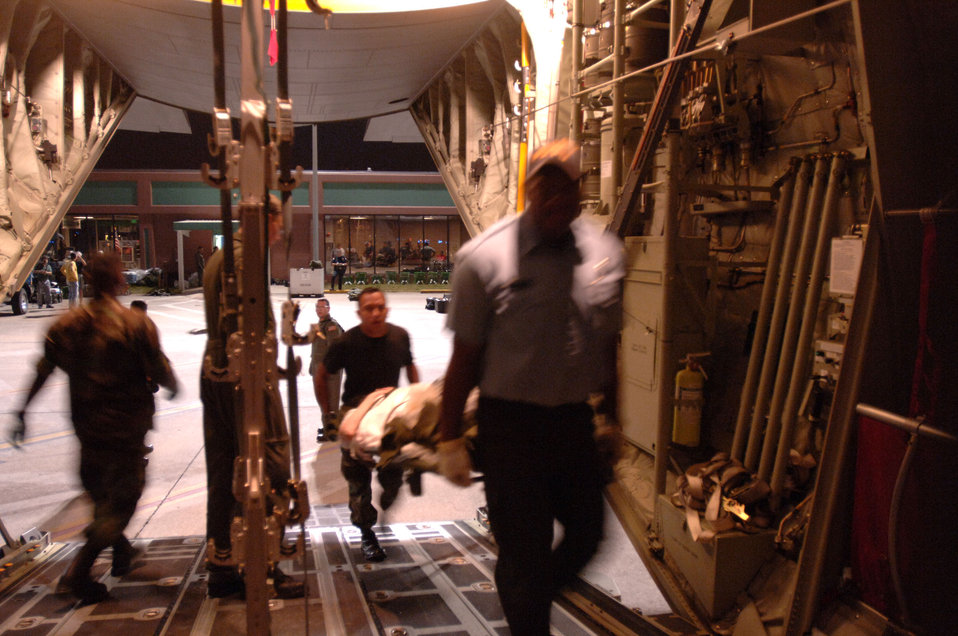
Airlifted to safety

BEAUMONT, Texas -- A patient is carried aboard a C-141 Starlifter here Sept. 22, during the evacuation of residents before the arrival of Hurricane Rita. Airmen from the 433rd Aeromedical Evacuation Squadron at Lackland Air Force Base, Texas, and the 183rd AES from the Mississippi Air National Guard conducted the evacuation. The evacuees were from regional hospitals, nursing homes and the local community. Air Force, Coast Guard and Navy aircraft airlifted nearly 2,000 patients and residents.